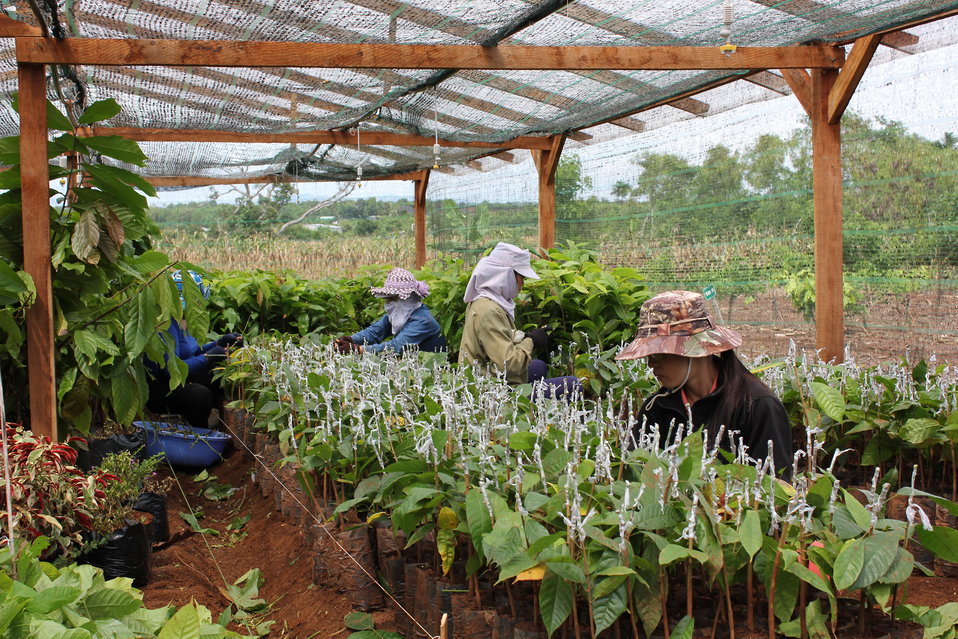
USAID supports cocoa cultivation in central Vietnam

Ea Kar District, Dak Lak Province. August 7, 2013.